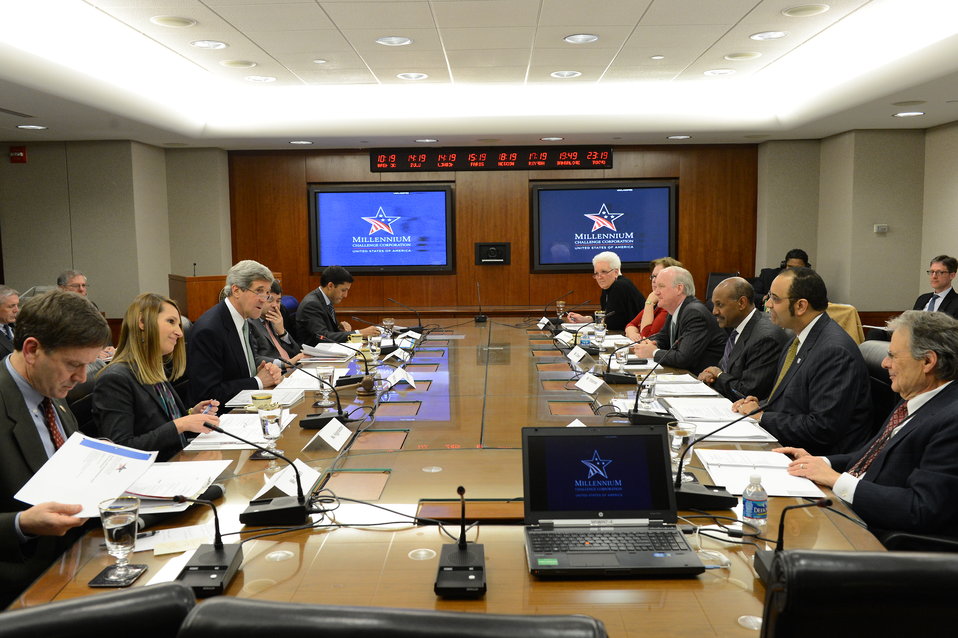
Secretary Kerry Hosts the Quarterly Millennium Challenge Corp (MCC) Board of Directors Meeting

U.S. Secretary of State John Kerry hosts and chairs the Quarterly Millennium Challenge Corporation (MCC) Board of Directors meeting at the U.S. Department of State in Washington, D.C., on March 14, 2013.